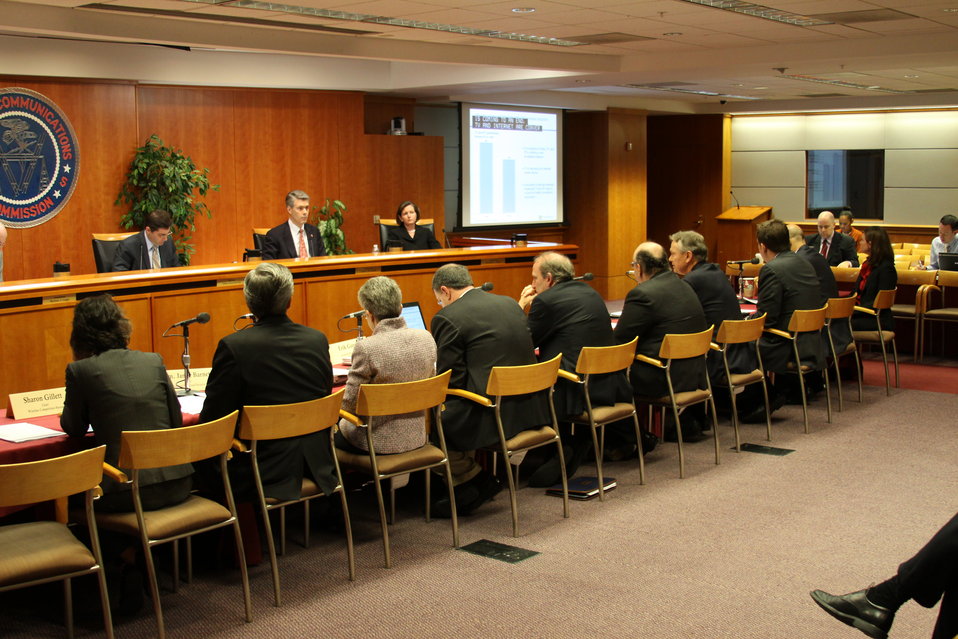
November Open Meeting